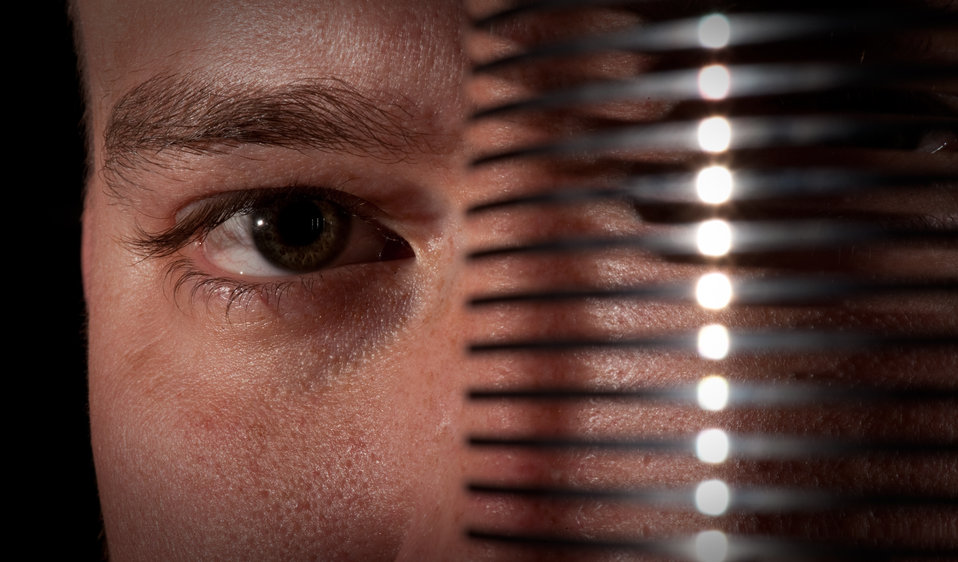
A close look at DoD Cyber Crime Center

Jon Beasley peers through a disk platter stack Sept. 9, 2010, at the Defense Computer Forensic Laboratory in Linthicum, Md. Mr. Beasley is an image and extraction technician who makes disk images of computer memory storage devices.